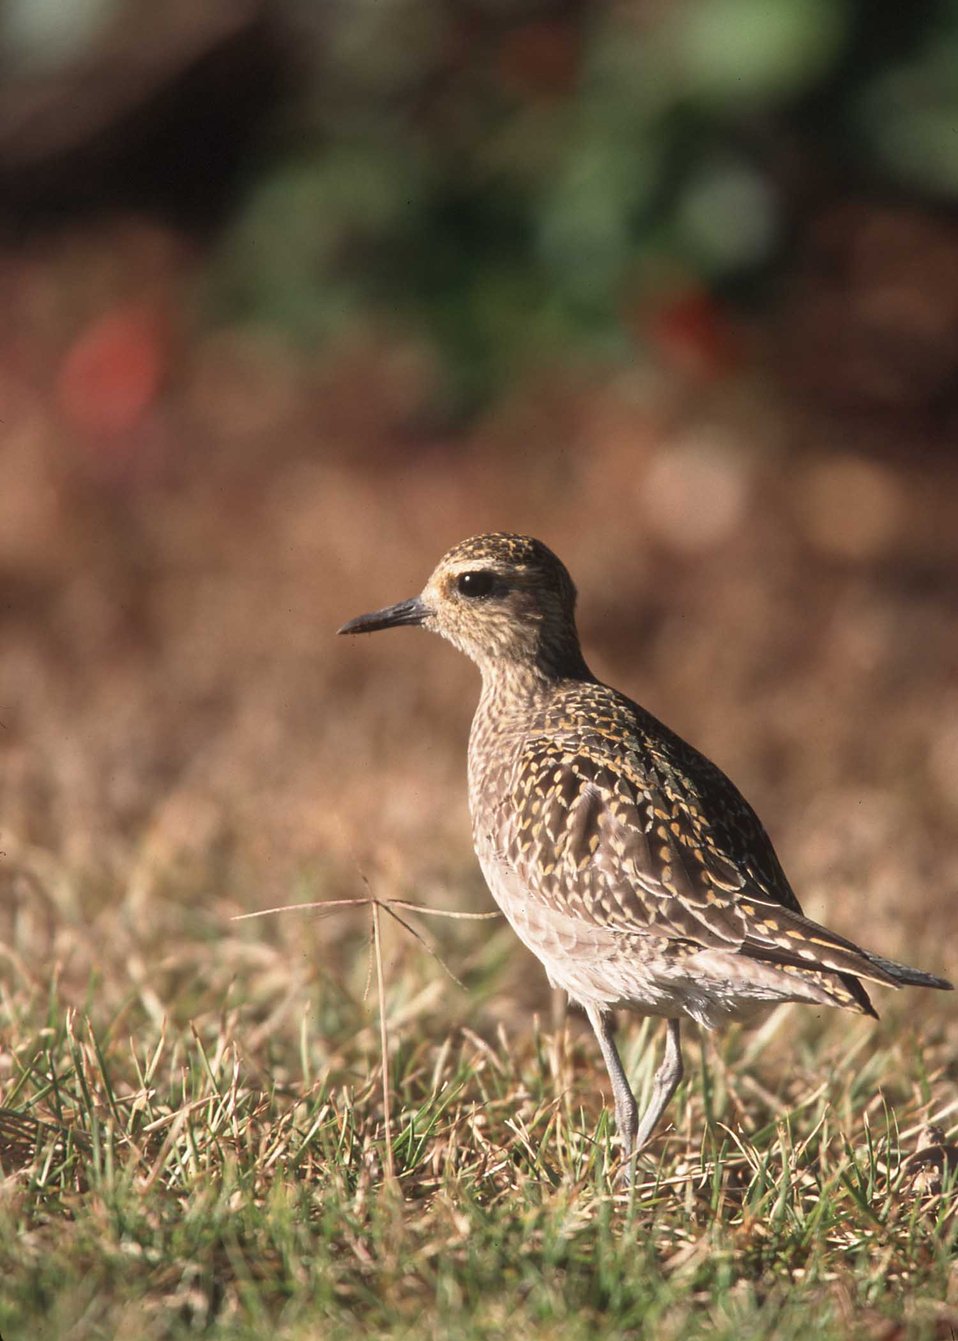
Pacific Golden Plover, most common migratory bird in Hawaii. It journeys to Alaska every spring. Common around wetlands adn grasslands from sea level to above 9000' elevation.